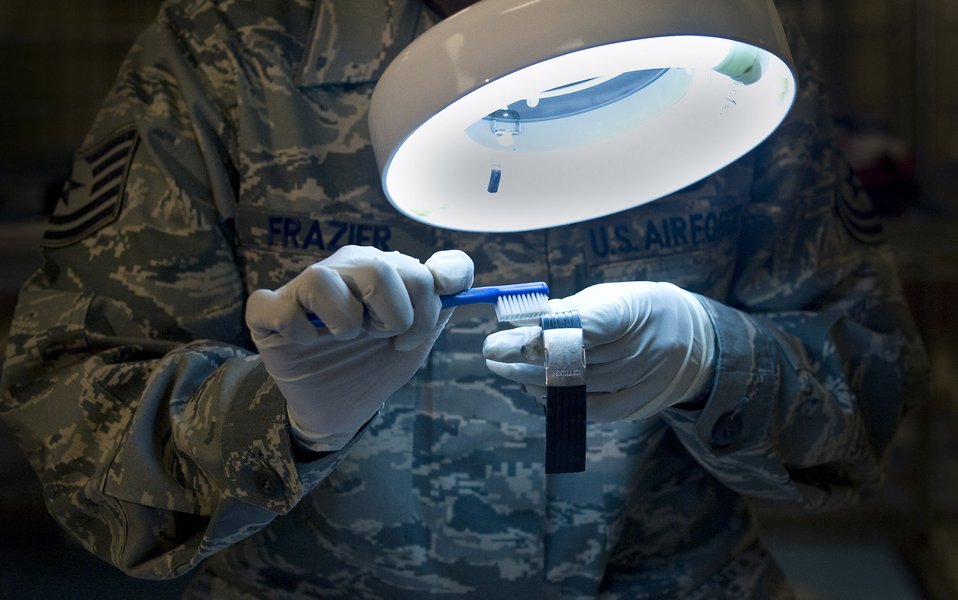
Dignified Transfer

Tech. Sgt. Latersa Frazier, a personal effects supervisor in the Air Force Mortuary Affairs Operations Center at Dover Air Force Base, Del., polishes a watch April 1 to demonstrate the cleaning process used on personal effects during preparation of remains, part of the dignified transfer process. The personal effects office prepares and cleans all items to be returned to the families of fallen heroes. Sergeant Frazier is deployed from the 43rd Force Support Squadron at Pope Air Force Base, N.C.